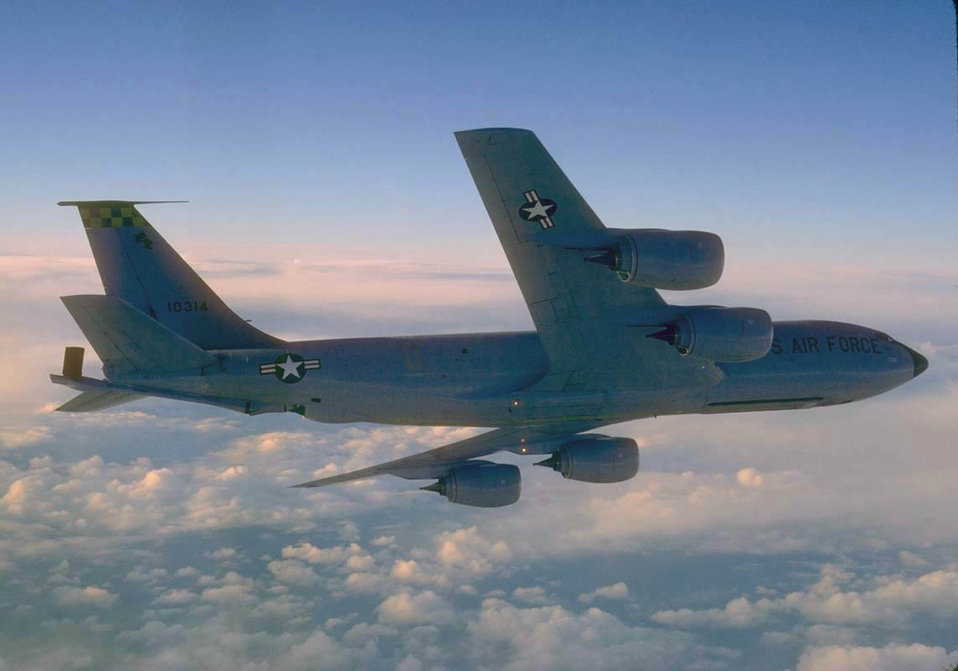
Stratotanker

FILE PHOTO -- The KC-135 Stratotanker's primary mission is to refuel long-range bombers. It also provides aerial refueling support to Air Force, Navy, Marine Corps and allied aircraft. Four turbojets, mounted under wings swept 35 degrees, power the KC-135. Nearly all internal fuel can be pumped through the tanker's flying boom, the KC-135's primary fuel transfer method. A special shuttlecock-shaped drogue, attached to and trailed behind the flying boom, is used to refuel aircraft fitted with probes. An operator stationed in the rear of the plane controls the boom. A cargo deck above the refueling system holds passengers or cargo. Depending on fuel storage configuration, the KC-135 can carry up to 83,000 pounds (37,350 kilograms) of cargo.